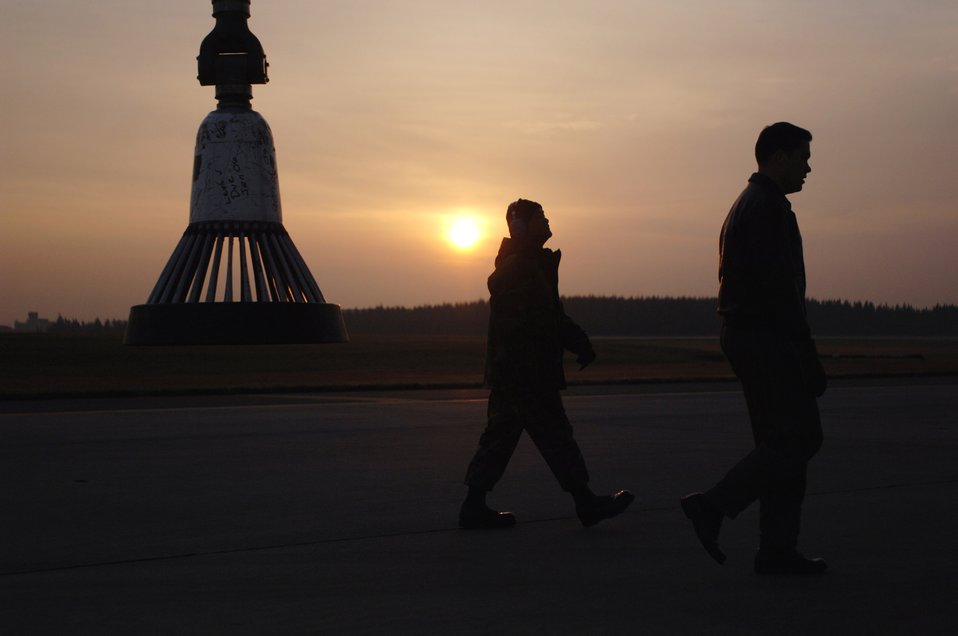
Keeping Stratotankers flying

YOKOTA AIR BASE, Japan (AFPN) -- KC-135 Stratotanker pilot Capt. Brian Burr (right), preflights his aircraft with crew chief Senior Airman James Taimanglo before an exercise Cope North 05 morning sortie. Cope North is a bilateral exercise to enhance U.S. and Japanese air operations. It gives pilots from both countries opportunities to conduct training in air combat tactics, electronic combat and airborne air control. Captain Burr is with the 909th Air Refueling Squadron, and Airman Taimanglo with the 718th Aircraft Maintenance Squadron here.